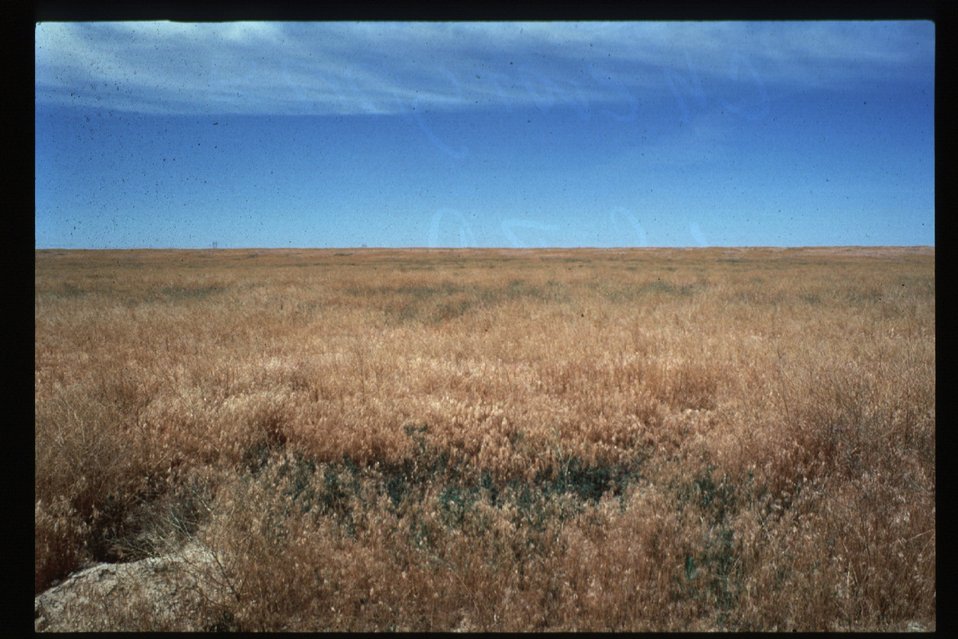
Rangeland BOP NCA Cheat Grass Noxious Weeds Owyhee Field Office LSRD Lower Snake River District